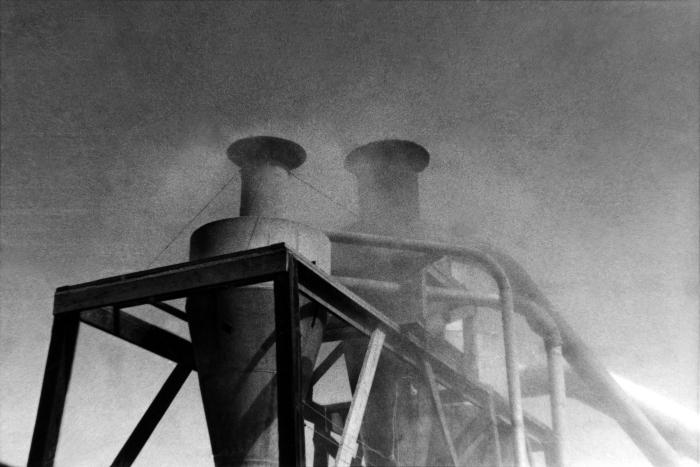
This 1947 historical photograph was provided by the Center for Disease Control's (CDC), National Institute for Occupational Safety and Health (NIOSH), and depicted two tall containment vessels and ducts that were used in the storage and handling of agricultural material on a Kansas farm. This image was part of a collection that was used to document the many aspects of various industrial activities, so as to better understand these workplace environments, and their associated hazards. In gaining a better understanding of workplace hazards, protocol-formulating bodies such as NIOSH, are better able to create a safer workplace through substantiation of appropriate safety regulations.